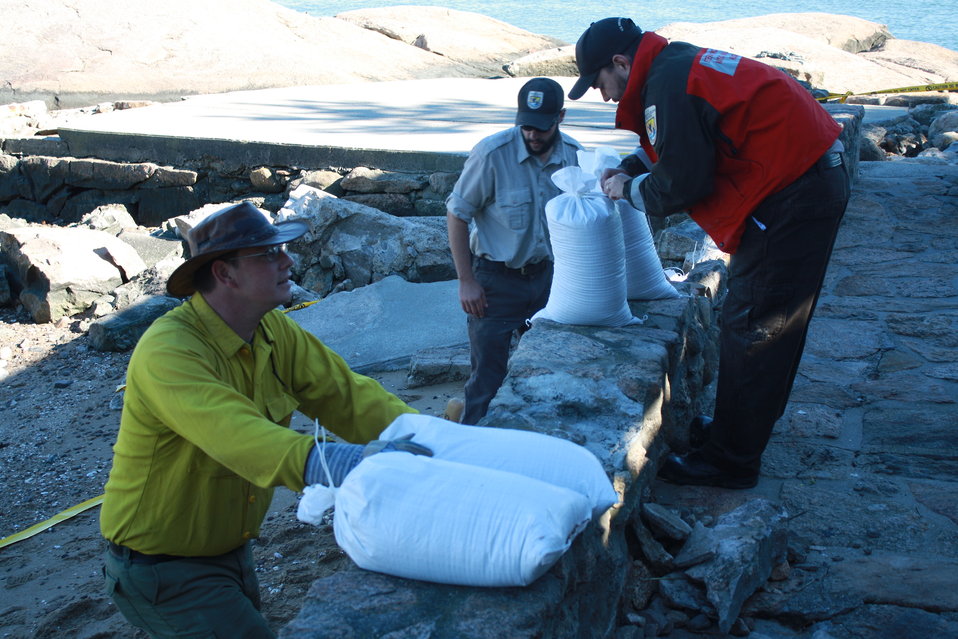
Beginning repairs at Stewart B. McKinney National Wildlife Refuge (CT)

Staff and crews filling sand bags to repair holes in the ground and foundation at Outer Island. The sand bags will help secure and stabilize the disturbed ground to ensure public safety.